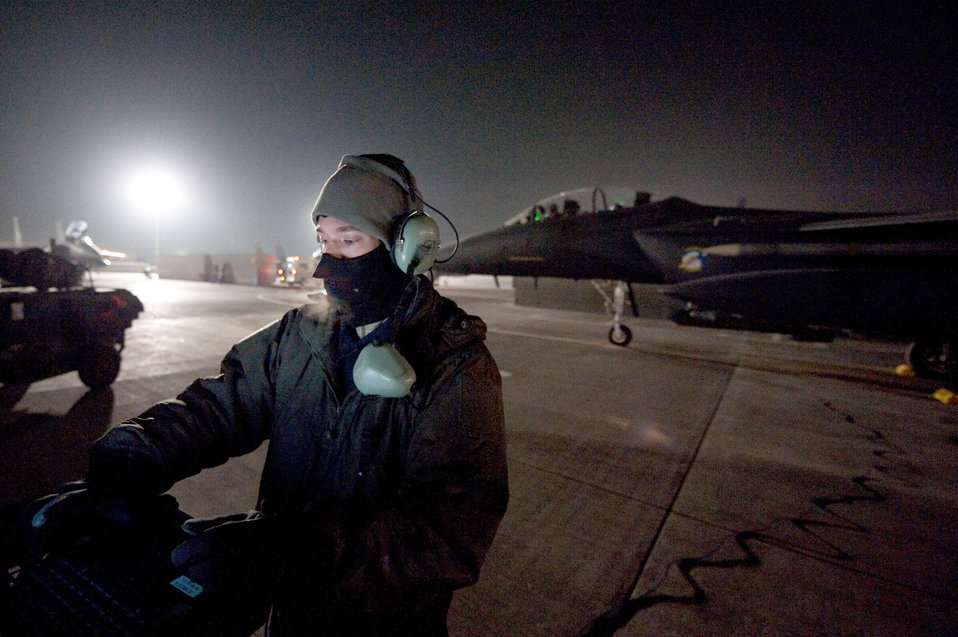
Mission preparation at Bagram

Airman 1st Class Isaac Hurd readies an F-15E Strike Eagle for take off Jan. 4, 2011, at Bagram Airfield, Afghanistan. Airman Hurd is a crew chief with the 455th Expeditionary Aircraft Maintenance Squadron, and is deployed from Seymour Johnson Air Force Base, N.C.